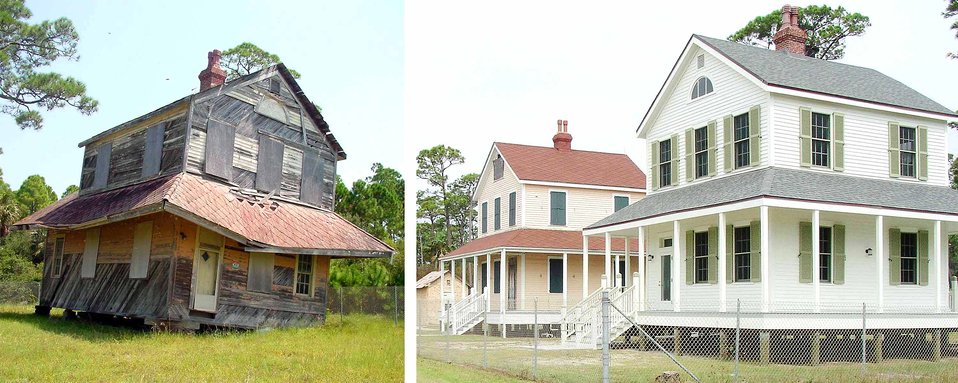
Eglin receives award for historic building restoration

Harsh weather ravaged the Cape San Blas keepers' quarters (left) over the years. That building and one other, located on a portion of Eglin Air Force Base, Fla., were both restored to their original appearance. The base's Cultural Resources Branch received a Florida Preservation Award for the restoration effort.